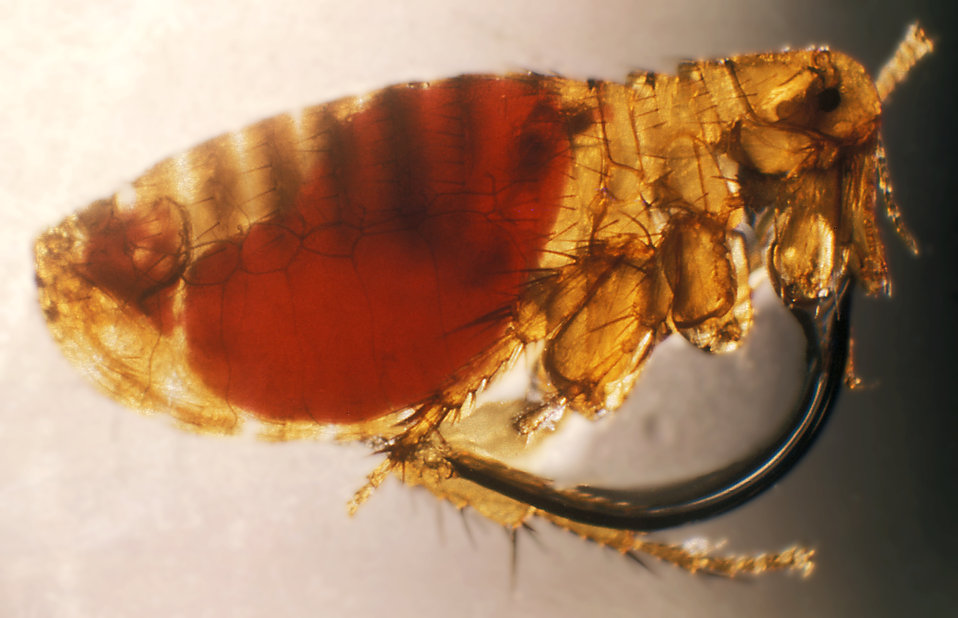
Plague-infected male Xenopsylla cheopis 12 days after feeding on an inoculated mouse.